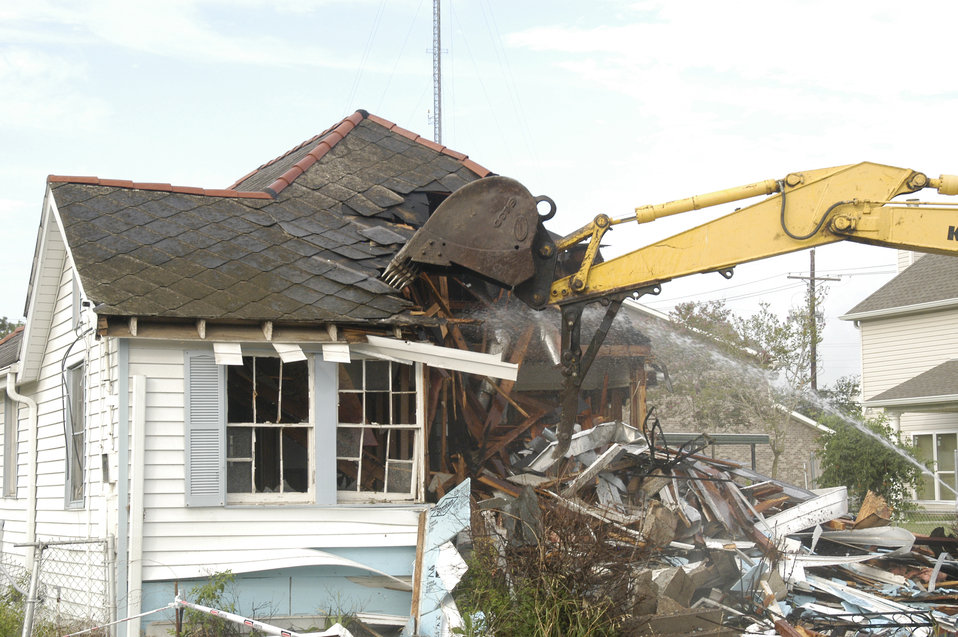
Many of the older homes and buildings in the New Orleans, LA, locale that were destroyed by Hurricane Katrina contained asbestos material (i.e. asbestos roofing tiles, transite siding, insulation, floor tiles, and popcorn ceilings). The U.S. Army Corps of Engineers (USACE) was mandated to follow strict environmental protocols in the demolition of these homes that were designated Regulated Asbestos Containing Material (RACM) demolitions. Prior to and during the demolition of the RACM house, water was constantly sprayed onto the building to prevent the asbestos containing material from becoming “friable” (airborne).